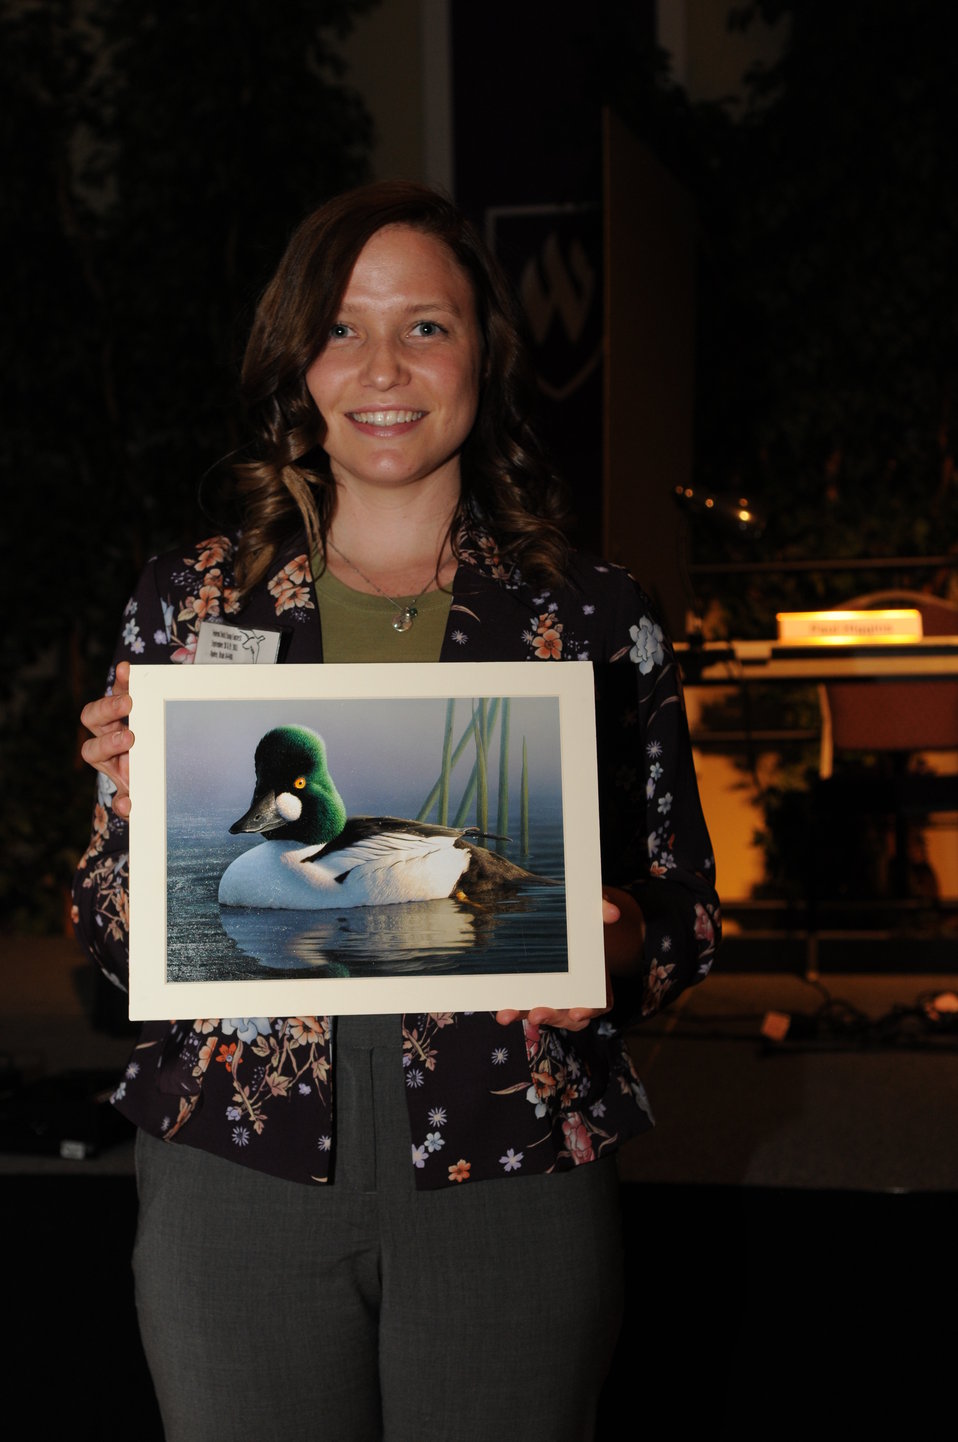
Everyone Loves a Winner

The U.S. Fish & Wildlife Service sponsored the 2012 Federal Duck Stamp Art Contest September 28 and 29 in Ogden, Utah, at Weber State University. A panel of five judges was responsible for choosing the art work used to design the 2013-2014 Migratory Bird Hunting and Conservation Stamp.